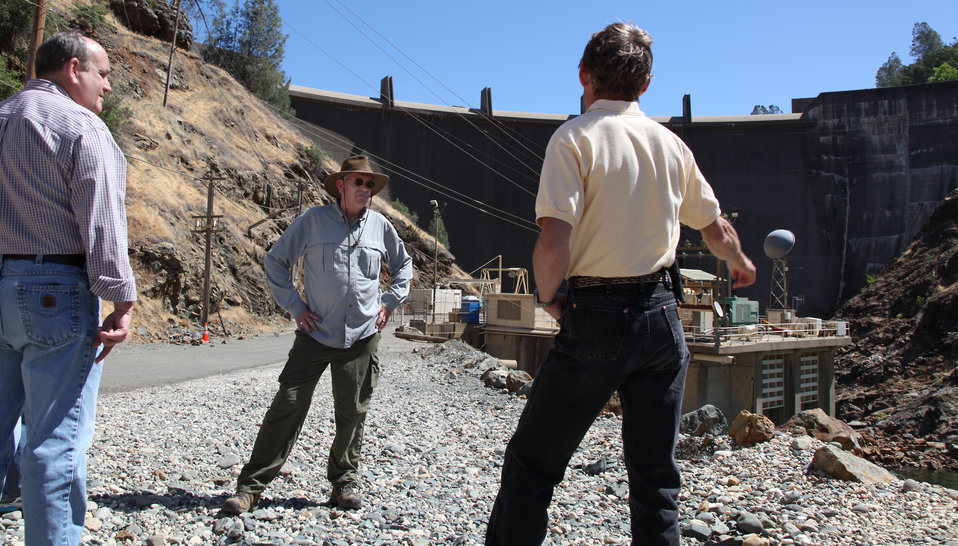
Corps reconnaissance team tours Yuba River

Mark Ellis, a member of the U.S. Army Corps of Engineers project management team (left), confers with Geoff Rabone, Yuba County Water Agency projects manager (center); and Tom Johnson, YCWA consultant (back to camera), near one of the two power-generating facilities immediately downstream of Englebright Dam. Members of the Corps team assessing possible federal projects for ecosystem restoration along Northern California's Yuba River reviewed the water’s route from Daguerre Point Dam up to Downieville June 18, 2014. The Corps team was accompanied by members of the Yuba County Water Agency and several YCWA consultants in this initial trip to gather data on the overall state of the Yuba and water facilities along the route.